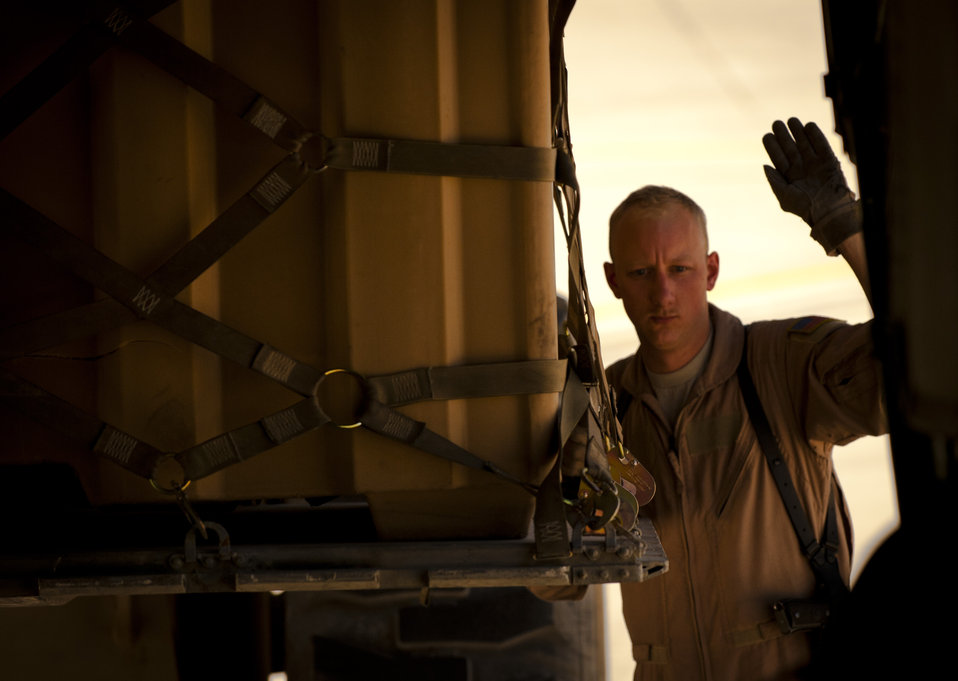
Hercules: A day in the life

Airman 1st Class Aaron Rishel directs a pallet of supplies into the back of a C-130H Hercules at Bagram Airfield, Afghanistan, June 2, 2012. Bagram Airfield’s C-130H aircrews fly day and night to transport personnel and supplies throughout Afghanistan. Rishel is a loadmaster deployed to the 774th Expeditionary Airlift Squadron.